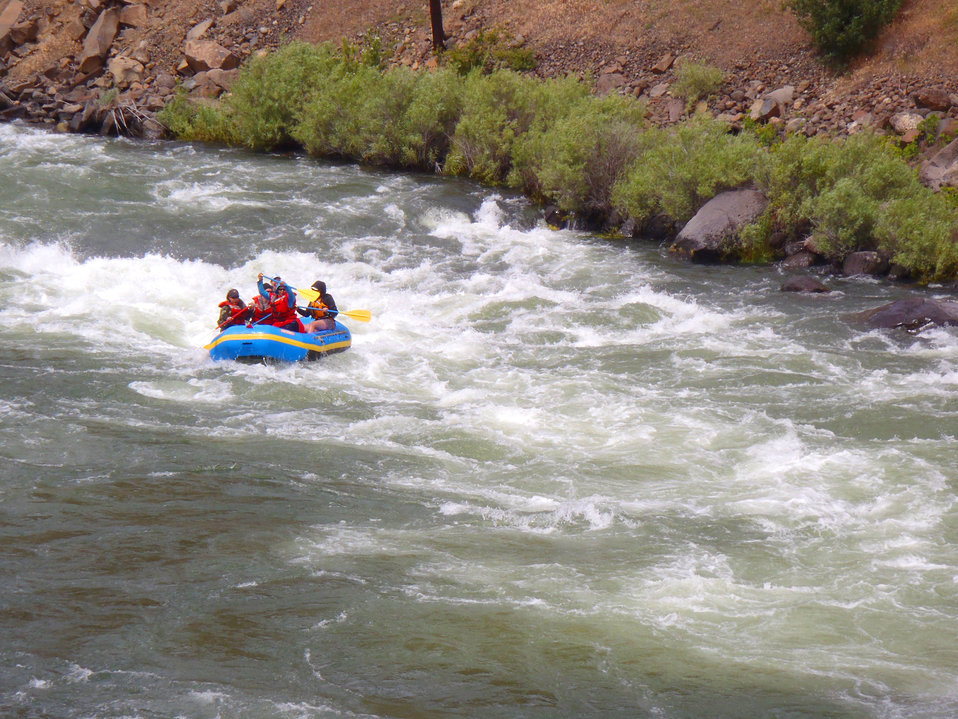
Veterans Outward Bound expedition

Outward Bound students learned to navigate and captain rafts through strong rapids while on an Outward Bound whitewater rafting veterans expedition June 6 through 10, 2010, on the Lower Deschutes River, Ore.